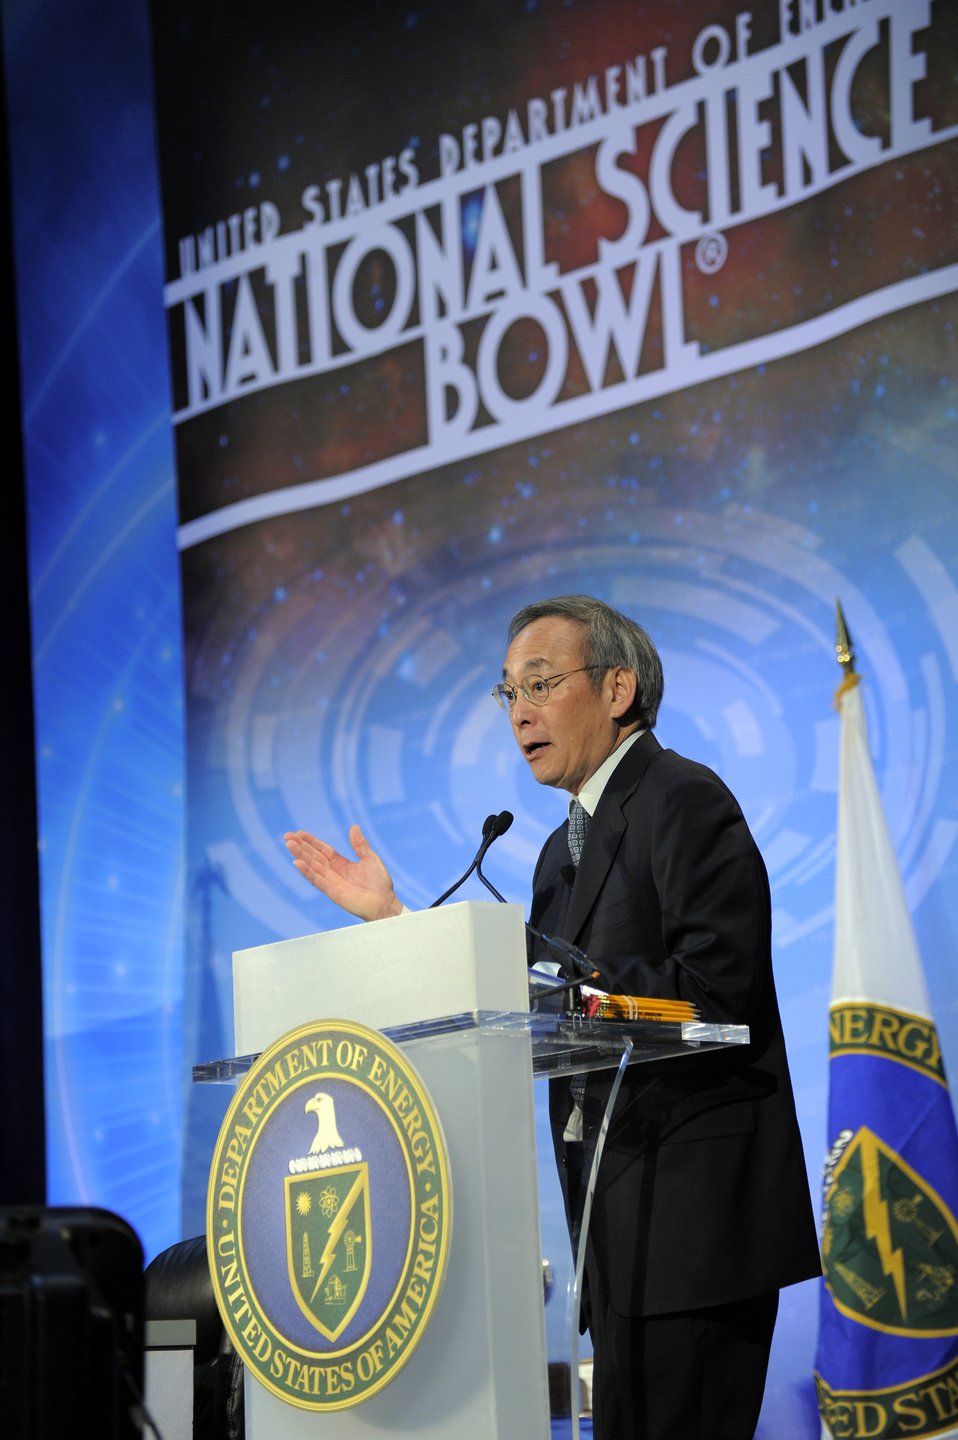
Secretary of Energy Steven Chu addresses students during the 2012 National Science Bowl in Washington, DC on April 30, 2012.

DOE created the National Science Bowl in 1991 to encourage students to excel in mathematics and sciences and to pursue careers in these fields. The department supports mathematics and science education to help provide a technically trained and diverse workforce for the nation. More than 2000,000 students have participated in the National Sciences Bowl throughout its history.